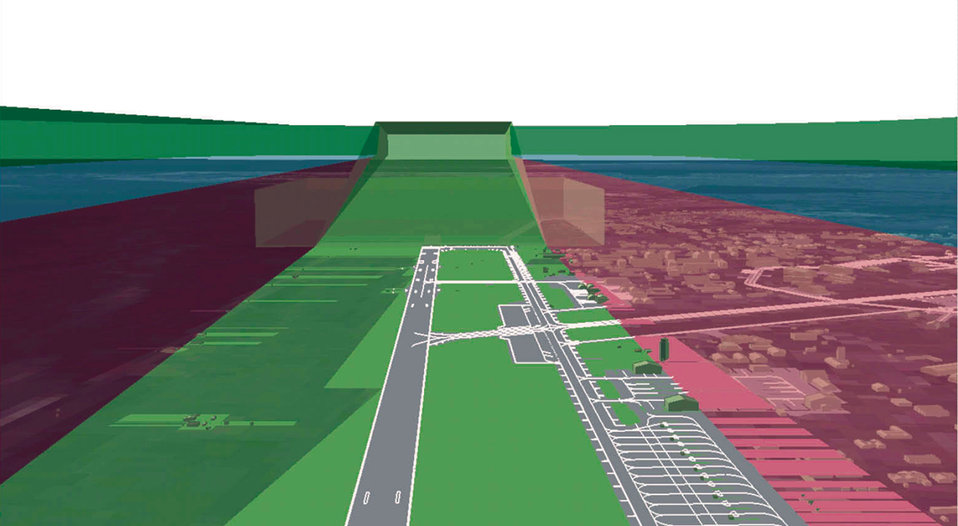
CE mapping goes digital with click of button

KUNSAN AIR BASE, South Korea -- A 3-D model of horizontal flight surfaces above the Kunsan airfield. Models like this assist planners and airfield managers with maintaining flight safety. These imaginary surfaces are the aviator's equivalent of lines painted on a highway and define how aircraft navigate above the airfield.